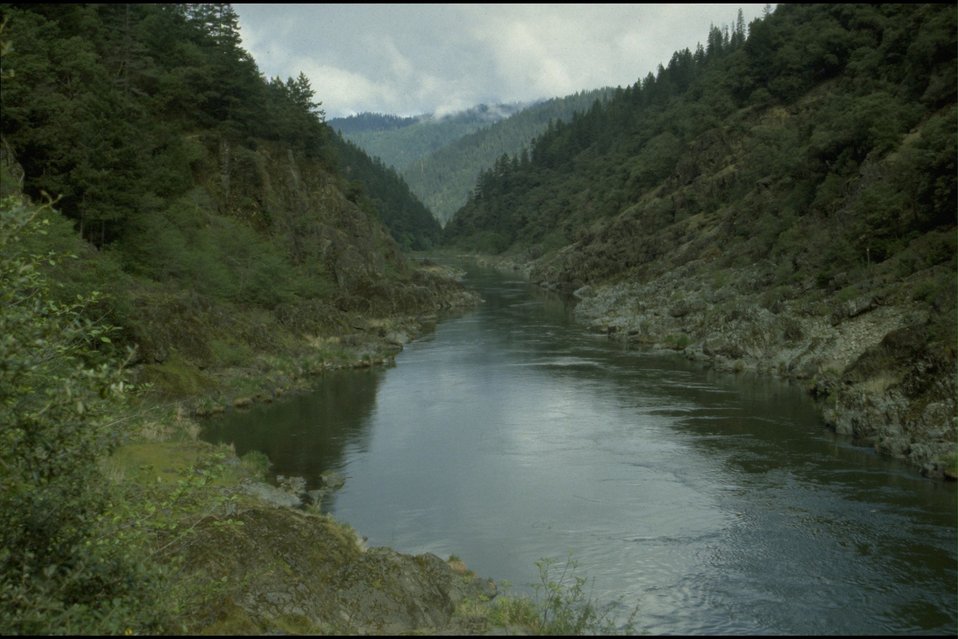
Rogue River - Just above Rainie Falls, wild section.